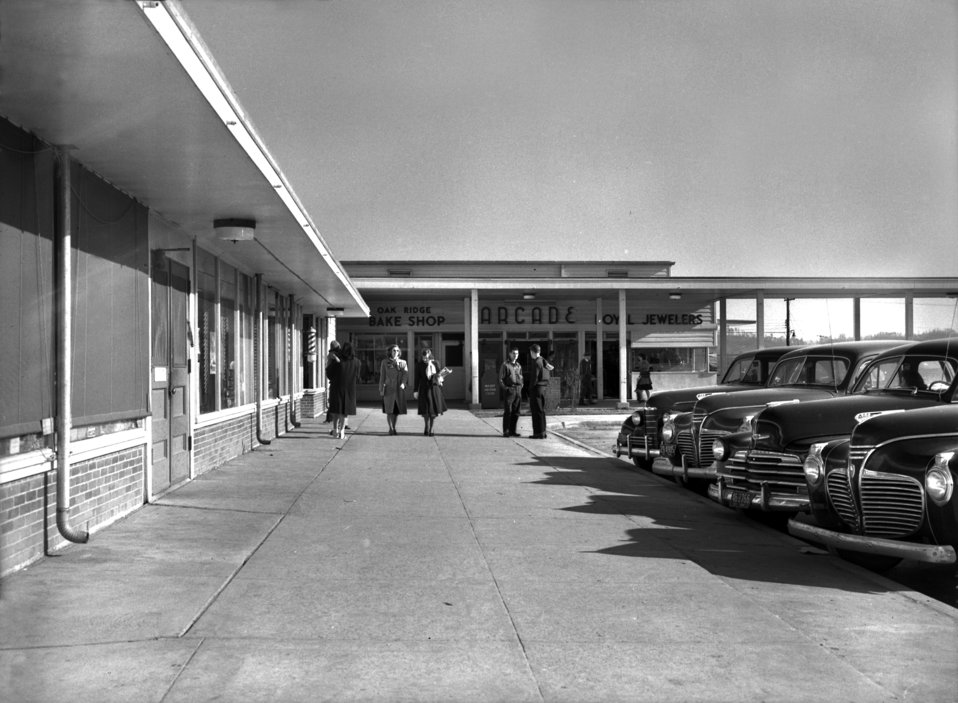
Jackson Square Shopping Center Townsite

4377 DOE photo by Ed Westcott
Oak Ridge Tennessee 3-8-1948